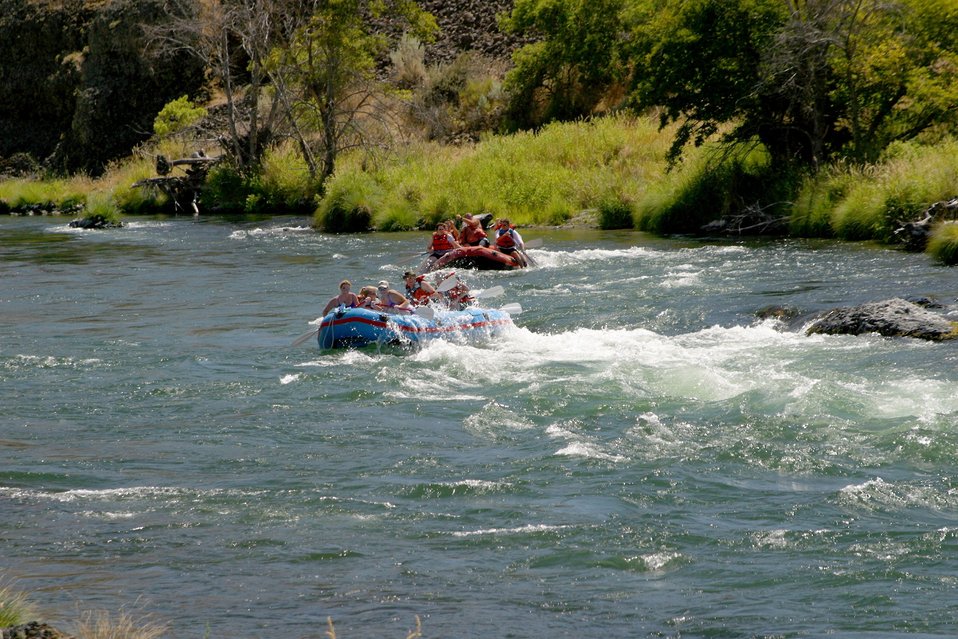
Looking up stream from the Sandy Beach take out.